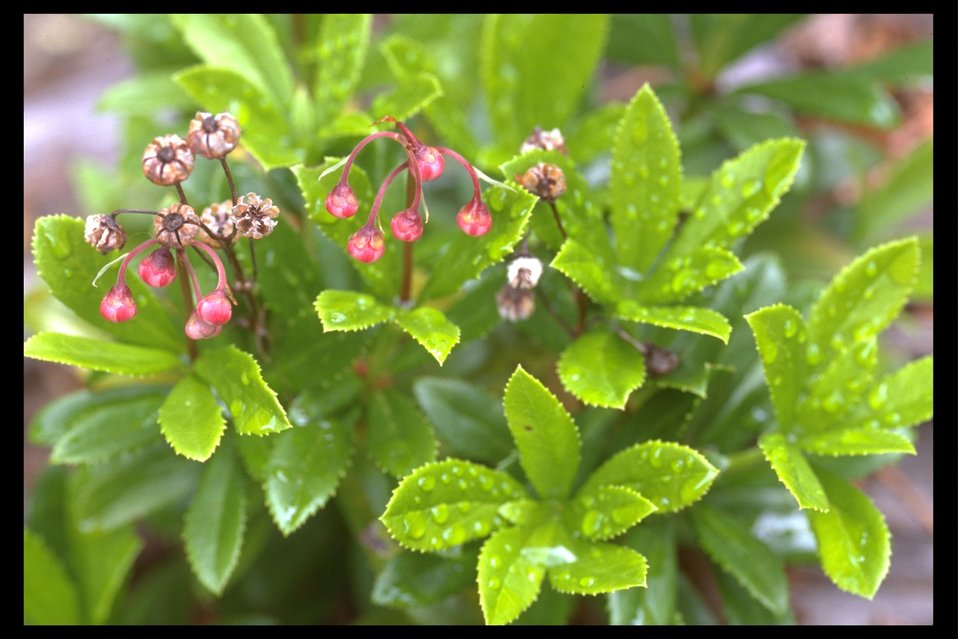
Western Prince's Pine, or called Pipsissewa (Chimaphila umbellata) at Upper Trail Creek.